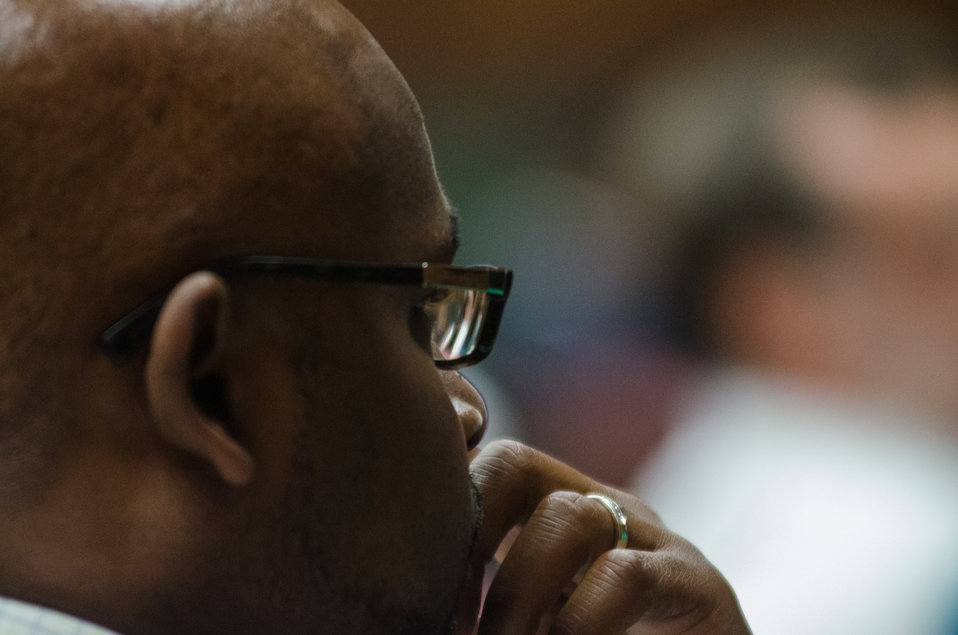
A U.S. Department of Agriculture (USDA) employee listens to speakers at USDA’s RD 2nd Annual Cultural Transformation kickoff opening ceremony and forums, themed “Employees Influencing Change,” on Tuesday, Aug. 13, 2013 USDA in Washington, D.C.